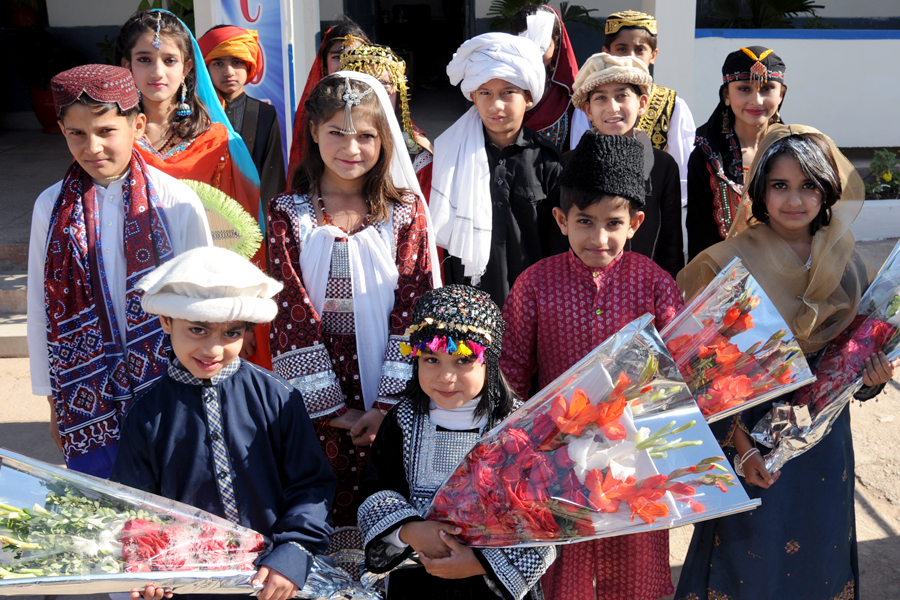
United States and Pakistan Launch the Pakistan Reading Project